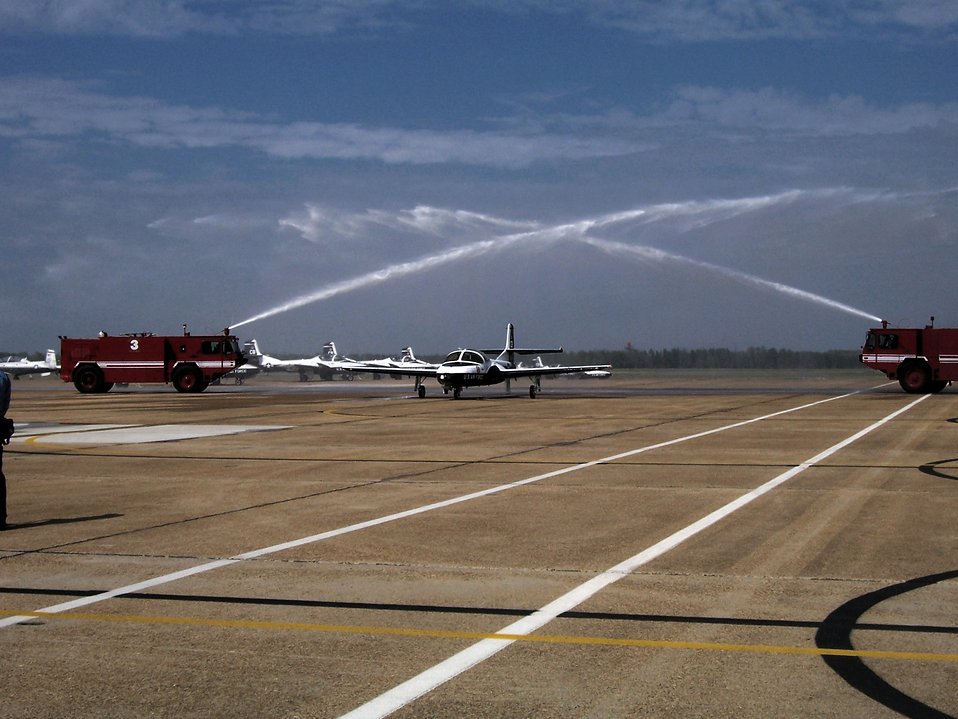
Tweet complete: T-37 retires after 39 years of service

The final T-37 Tweet student training sortie lands March 31 at Columbus Air Force Base, Miss. After serving the Air Force for more than 50 years, the T-37 is being replaced by the T-6 Texan II. The T-37 was officially retired from Columbus AFB Specialized Undergraduate Pilot Training during a ceremony April 3.